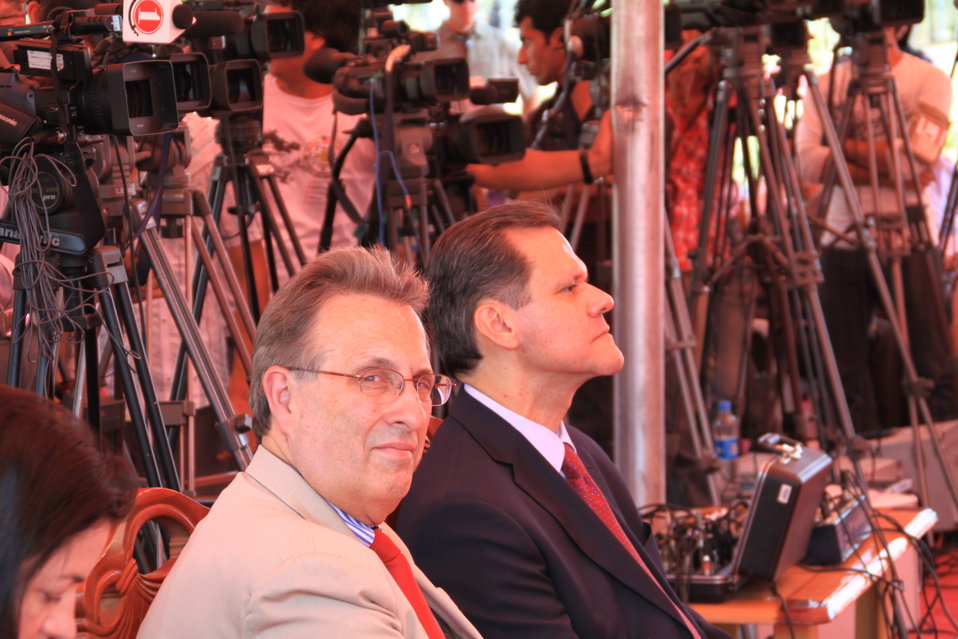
Badam Bagh Farm